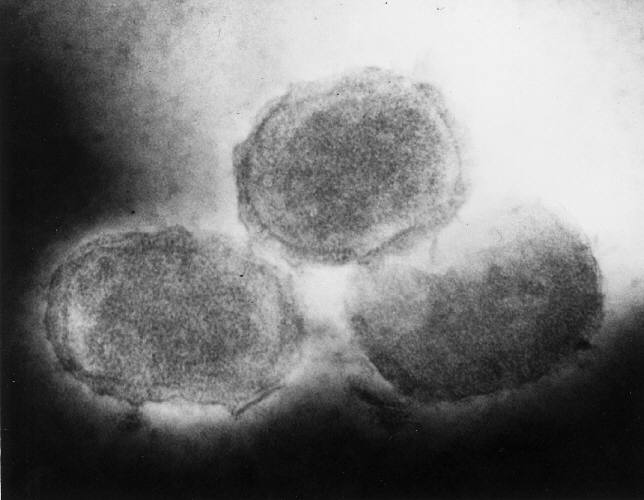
This transmission electron micrograph (TEM) revealed some of the ultrastructural morphology exhibited by a number of poxvirus, molluscum contagiosum, virions.